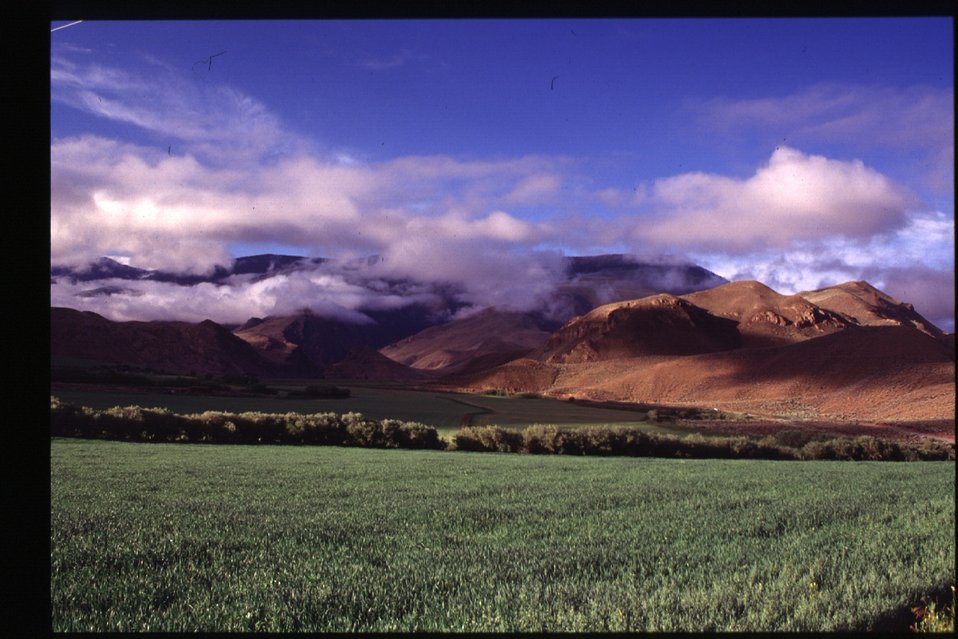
Scenics Salmon Field Office UCSC Upper Columbia Salmon Clearwater District